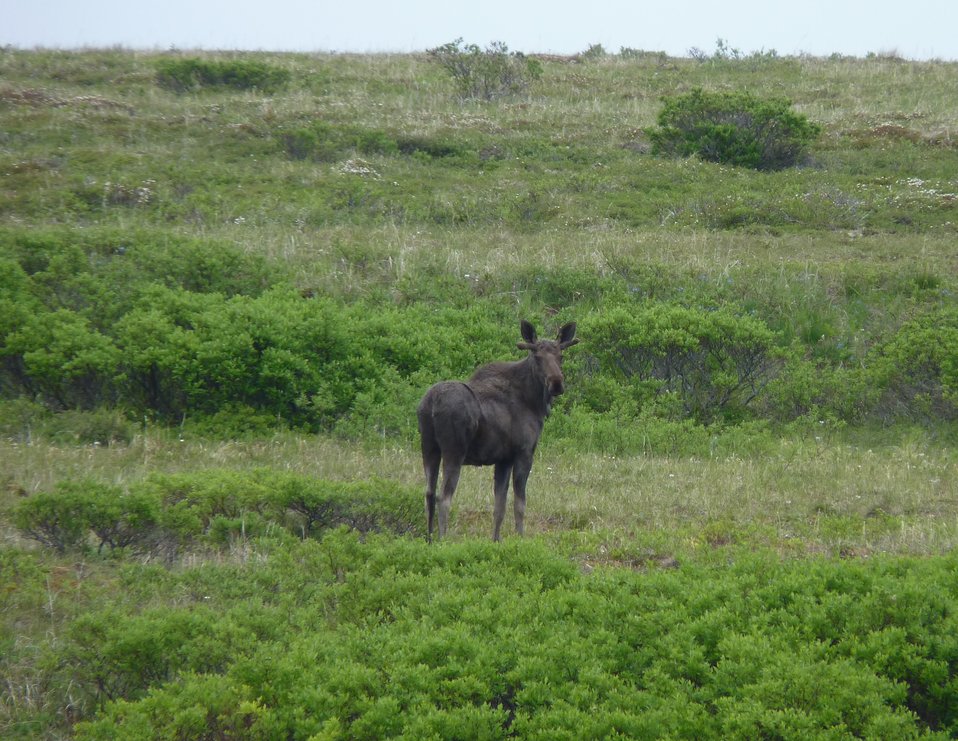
Moose

Andreafsky Wilderness, Yukon Delta National Wildlife Refuge